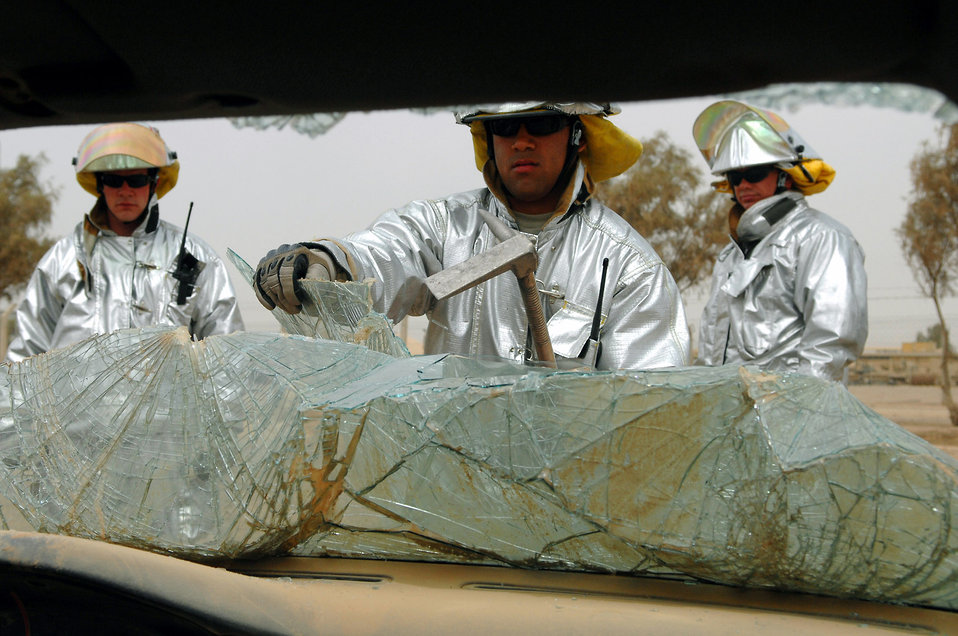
Bustin' in

Airman 1st Class Matthew Kahai pulls out a windshield of a car during vehicle extrication training April 5 at Balad Air Base, Iraq. This exercise teaches firefighters how to rescue victims from wreckage. Constant training enables the firefighters to keep their skills sharp and be prepared for emergencies. Airman Kahai is a 332nd Expeditionary Civil Engineer Squadron firefighter deployed from Minot Air Force Base, N.D.